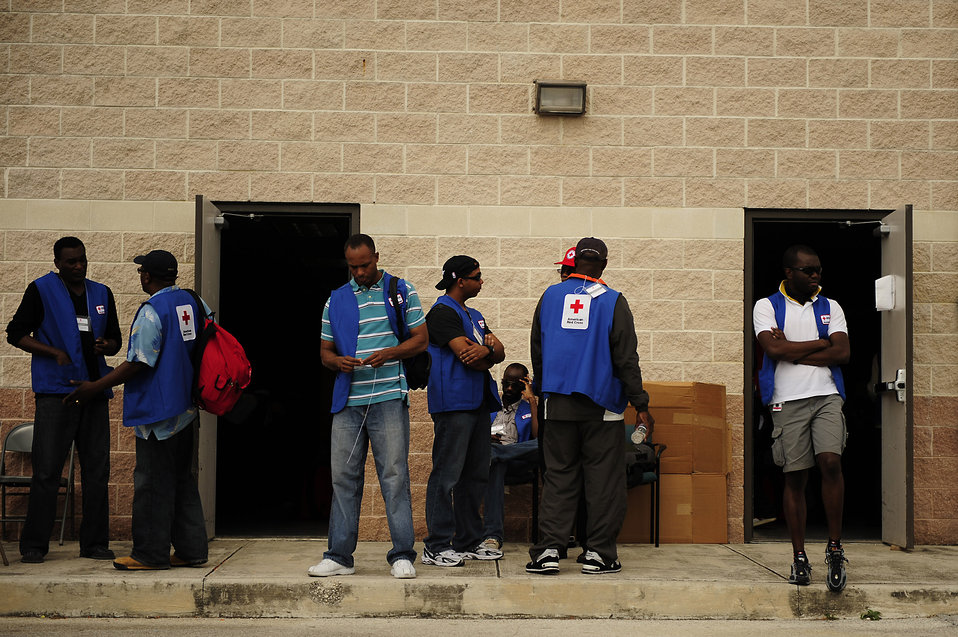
Operation Unified Response

Red Cross volunteers wait at Homestead Air Reserve Base, Fla.,to board a plane for Haiti Jan. 21, 2010. These volunteers are translators who will help U.S. servicemembers communicate with earthquake survivors receiving medical attention.